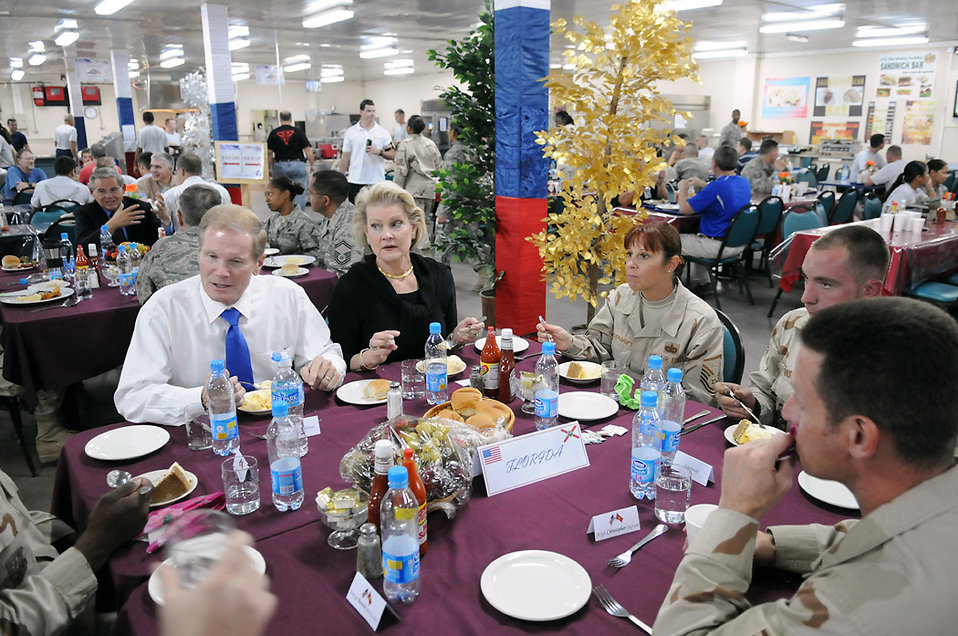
Congressmen visit servicemembers in Manas

Sen. Bill Nelson and his wife, Grace, talk with Airmen from Florida during a luncheon here, Aug. 5. The Florida senator and four others visited Manas as a part of an eight-day congressional delegation trip to promote security, democracy and development in central Asia. While at Manas, the senators visited with deployed Airmen and learned about the wing's mission as an air mobility hub supporting operations in Afghanistan.